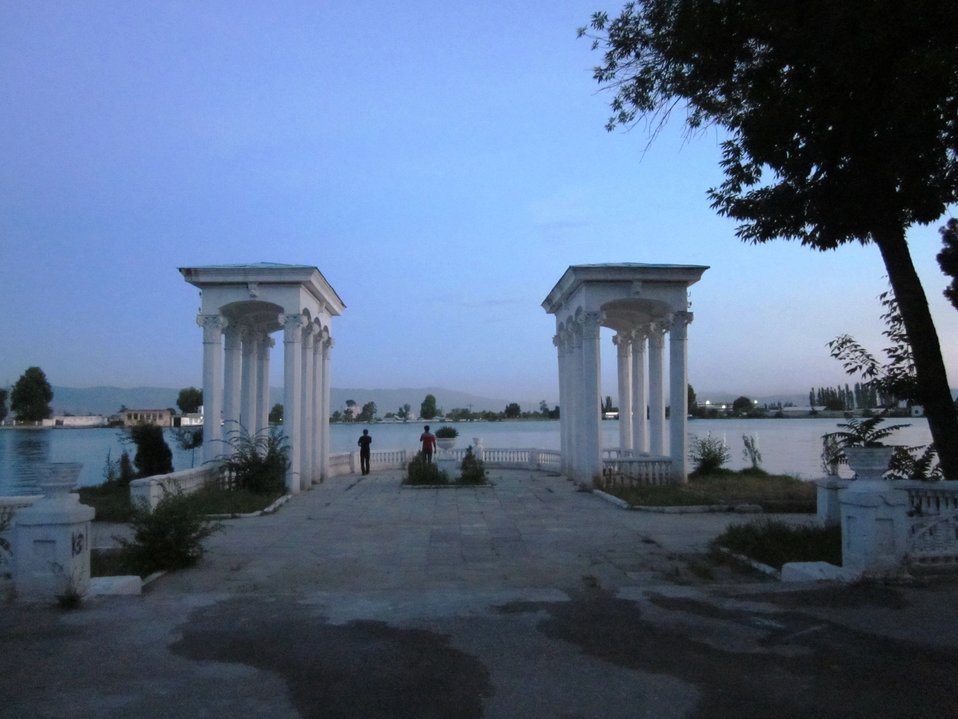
Lake Komsomol glistens in Dushanbe, Tajikistan, on June 6, 2010.